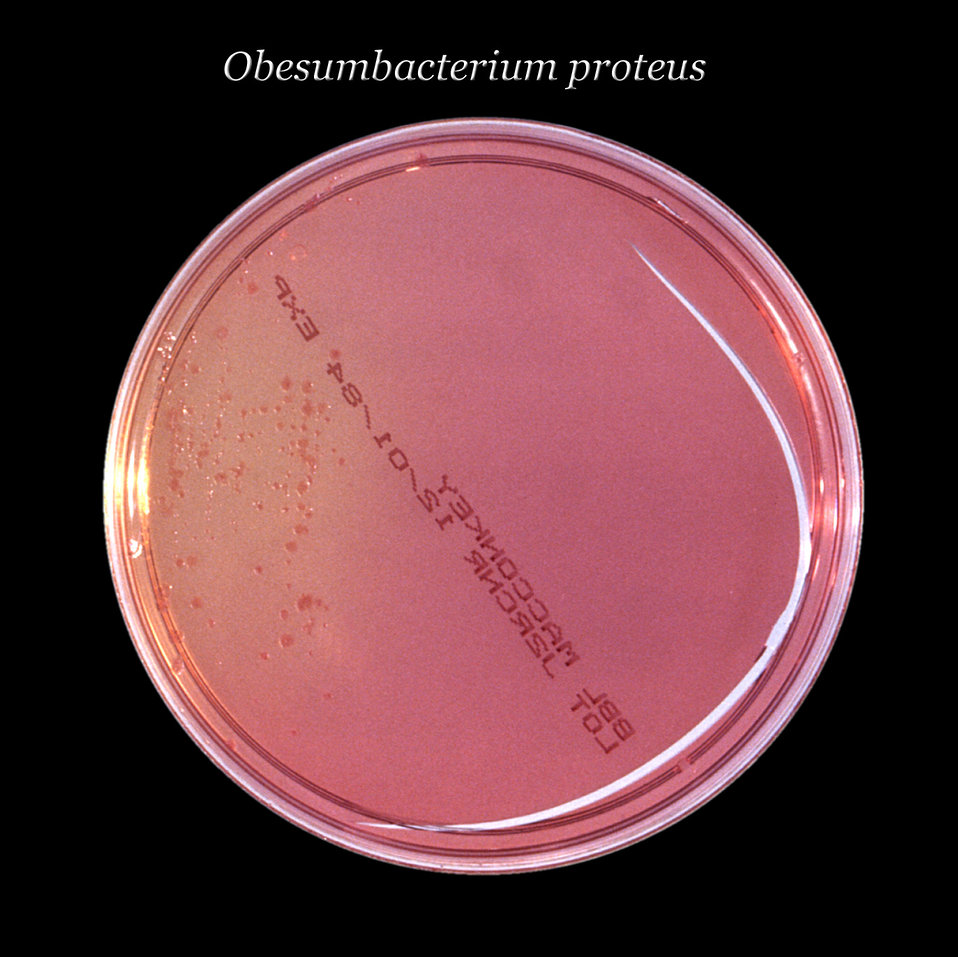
After 24 hours, this inoculated MacConkey agar culture plate cultivated colonial growth of Gram-negative, rod-shaped Obesumbacterium proteus bacteria.